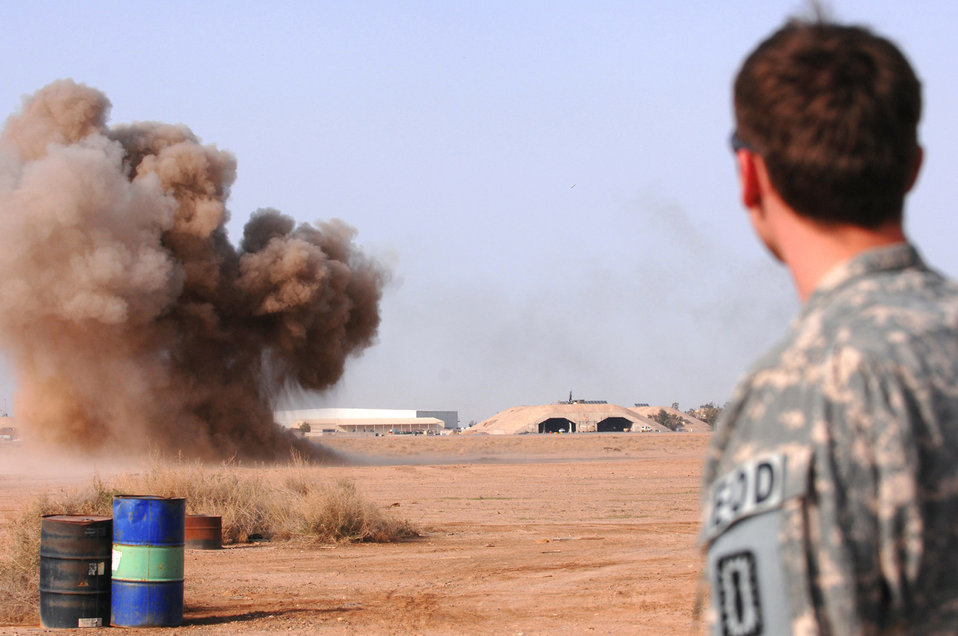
Blast off

Airman 1st Class Brian Dunnagan stands by as a controlled detonation is successfully completed March 13 at Balad Air Base, Iraq. Unexploded ordnances are collected and destroyed during controlled detonations to prevent them from reentering opposing forces' hands. Airman Dunnagan is a 332nd Expeditionary Civil Engineer Squadron explosive ordnance disposal technician deployed from Hurlburt Field, Fla.